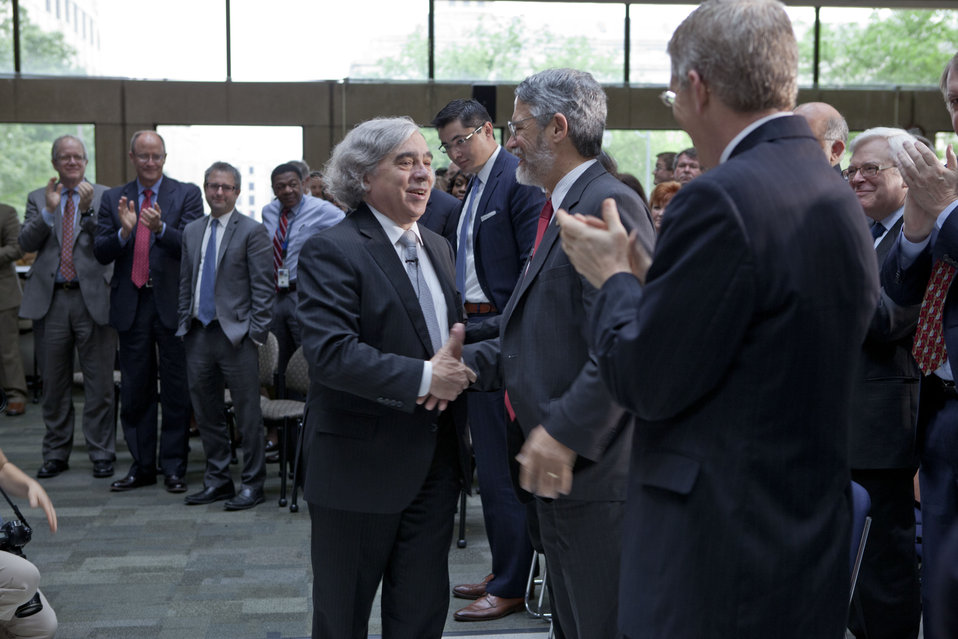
Secretary Moniz Meets DOE Employees and Guests

After the ceremony, attending members of the Department of Energy community were able to meet Secretary Moniz. In this photo, Secretary Moniz greets and thanks John P. Holdren, director of the White House Office of Science and Technology Policy.